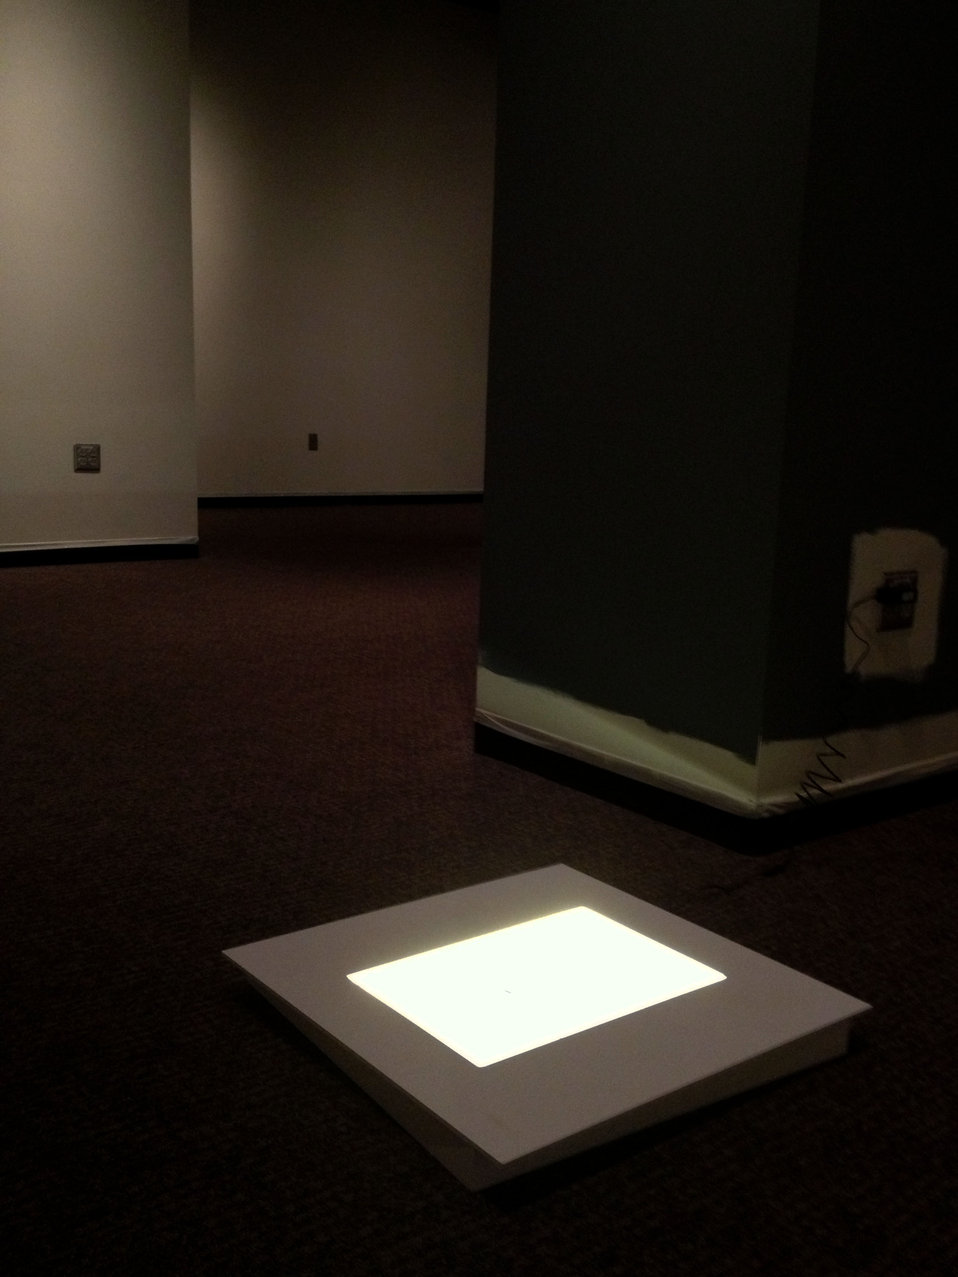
Documerica Light Box

Testing out the light box that will be used at the entrance to the 'Searching for the Seventies' exhibit.